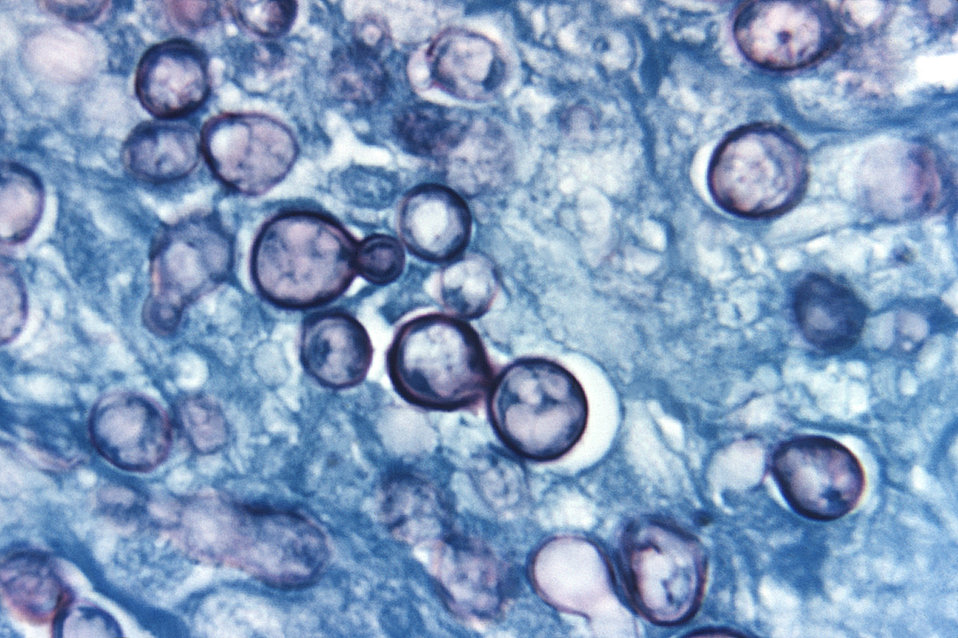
Note the histopathologic changes seen in histoplasmosis due to Histoplasma capsulatum var. duboisii.